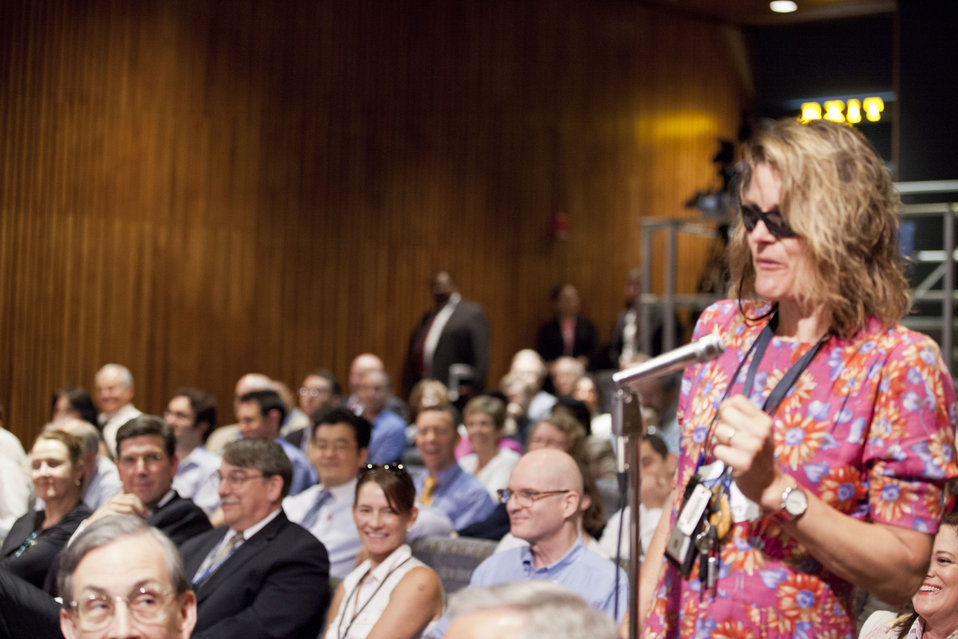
DOE Town Hall

On May 22, 2013, newly sworn-in Energy Secretary Dr. Ernest Moniz opened up a town hall forum. DOE employees were invited to attend, and submit questions to staff.